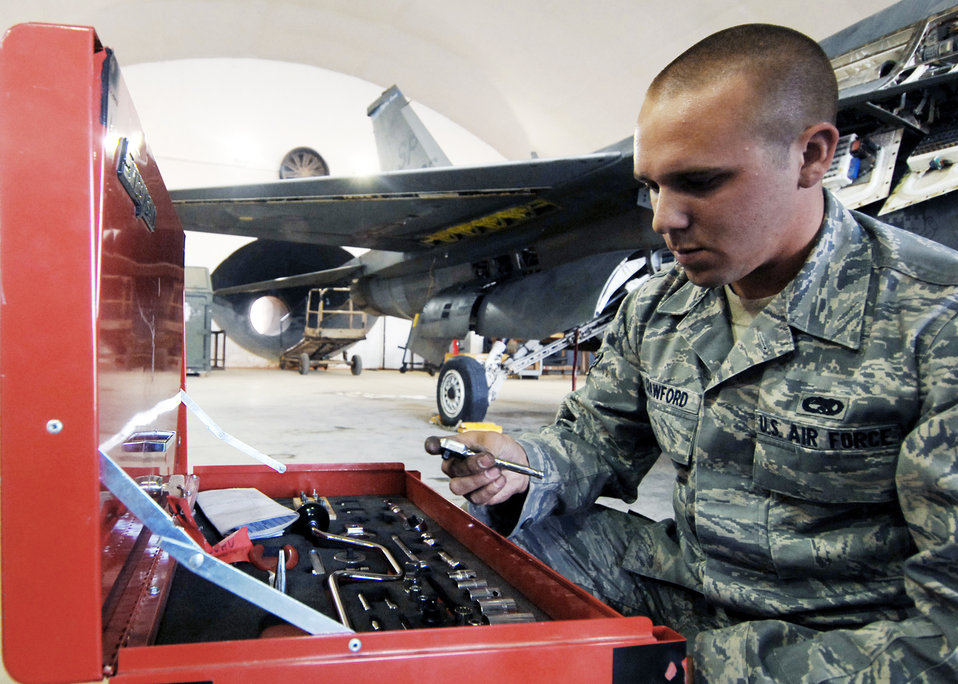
Balad maintainers keep F-16s flying

Airman 1st Class Kyle Crawford, 332nd Expeditionary Maintenance Squadron electronics and environmental systems specialist, inventories a composite tool kit Oct. 20, 2009 at Joint Base Balad, Iraq.